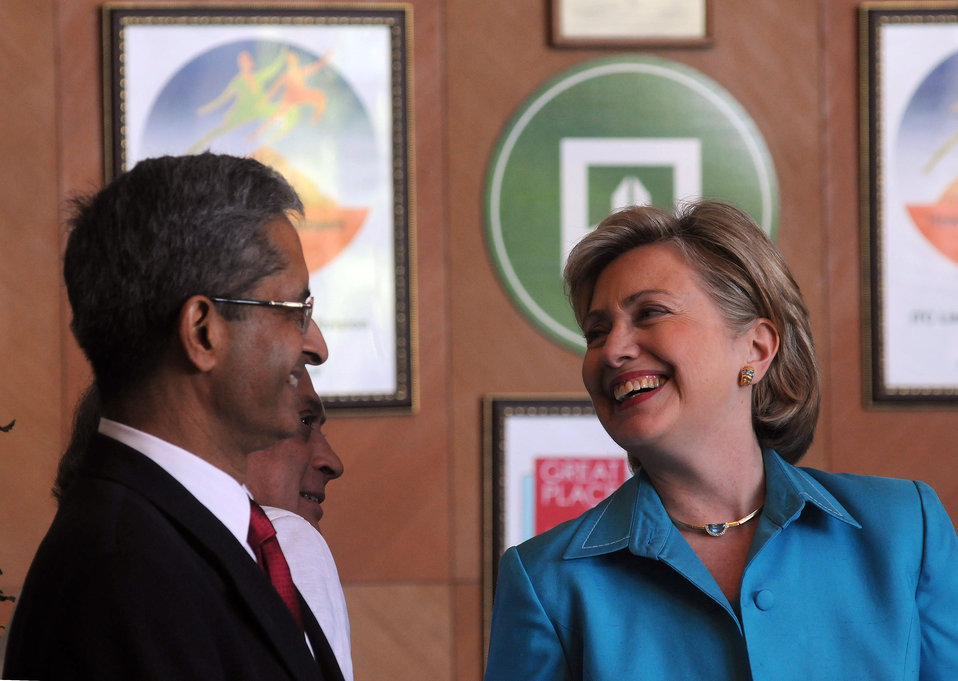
Secretary Clinton Visits ITC Green Center

U.S. Secretary of State Hillary Rodham Clinton chats with Mr. S. C. Sekhar, ITC Senior Executive Vice President, at a visit to ITC's Green Center in Gurgaon, outside of New Delhi, India July 19, 2009.